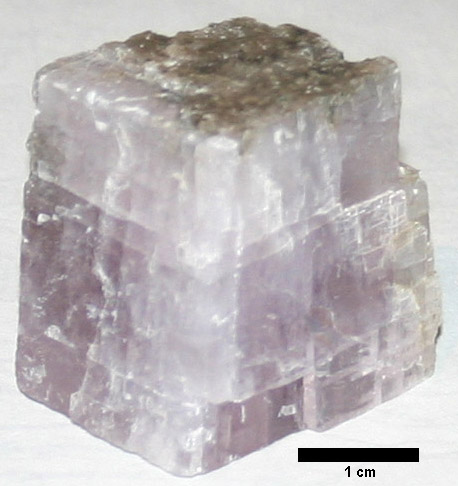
Calcite containing Niobium (giving it distinctive bluish color), from Medford Quarry, Caroll County, Maryland. Collected 2002. Scale bar is 1 cm.